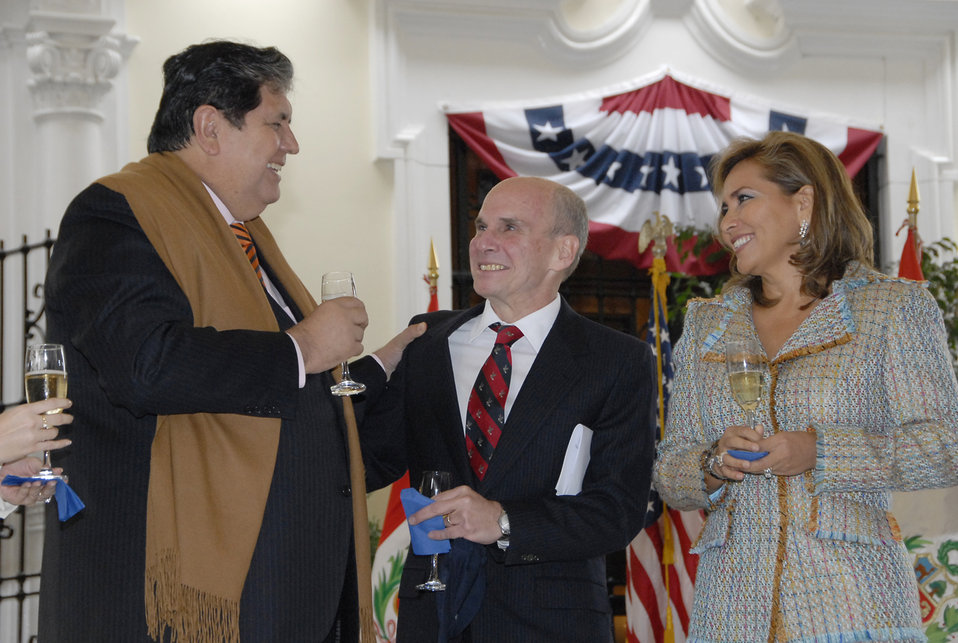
Peruvian President Alan Garcia Perez Speaks with Ambassador Michael McKinley and Fatima McKinley

Peruvian President Alan Garcia Perez (left) speaks with U.S. Ambassador to Peru Michael McKinley, and his wife, Fatima McKinley, during the U.S. Independence Day celebration at the U.S. Embassy Lima in Peru on July 4, 2010.